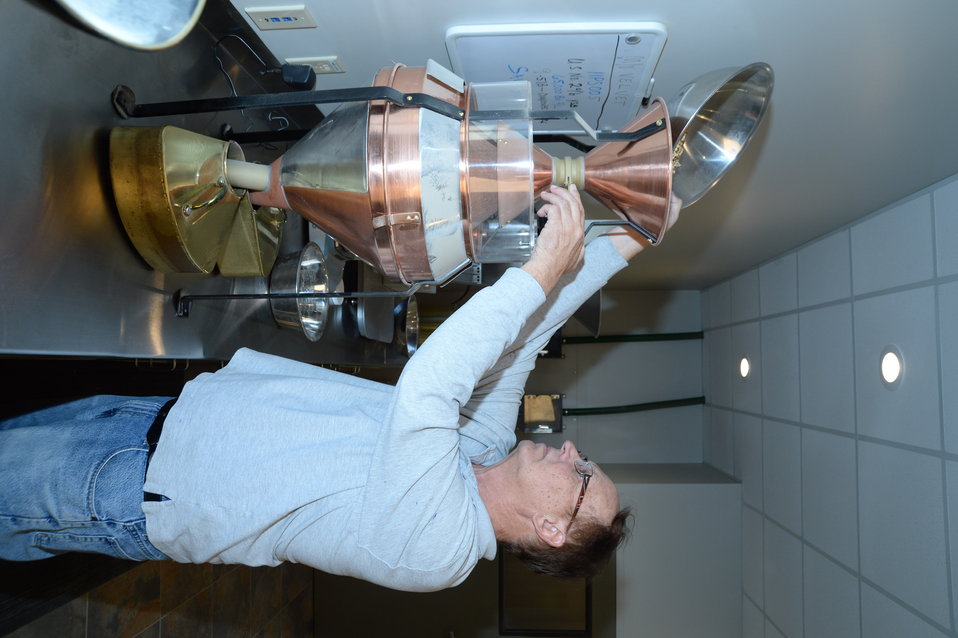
U.S. Department of Agriculture (USDA) Grain Inspection, Packers and Stockyards Administration (GIPSA) Federal Grain Inspection Service (FGIS) employee tests U.S. grain ready for export near the Port of New Orleans in New Orleans, LA on Tuesday, Nov. 19, 2013.